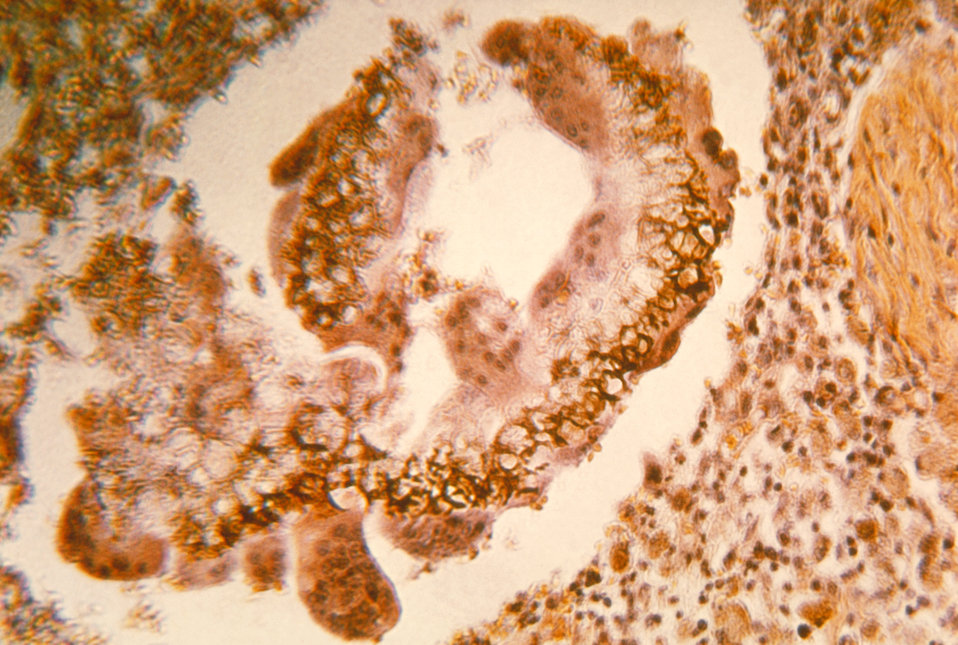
This micrograph depicts the histopathologic changes found in black grain mycetoma in dog due to Curvularia geniculata.